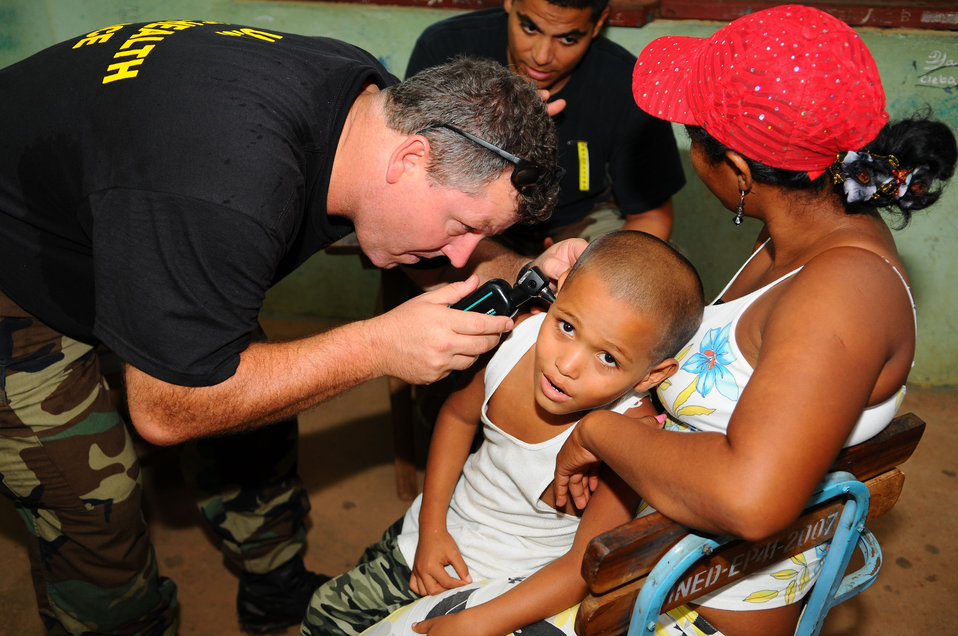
This 2008 photograph depicts U.S. Public Health Service (USPHS), Lt. Cmdr. Gary Brunette, as he was examining a patient in Puerto Cabezas, Nicaragua, during Operation Continuing Promise (CP) 2008. In this case, the patient, a young boy, was seated in his mother's lap during the exam.